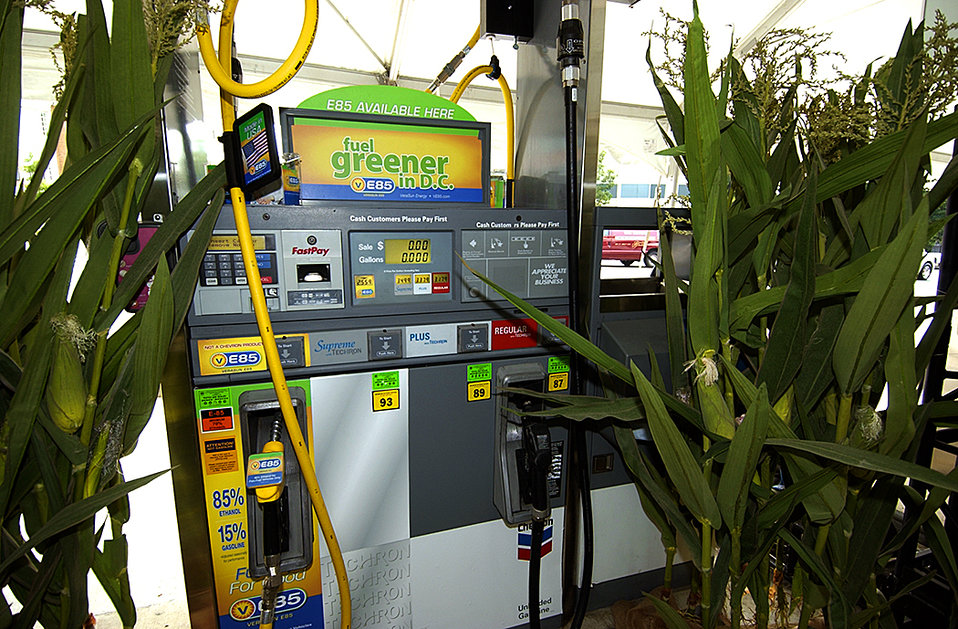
The E-85 pump at the Georgetown Chevron Station in Washington, DC is the first publicly available E-85 fueling station, August 28, 2007.